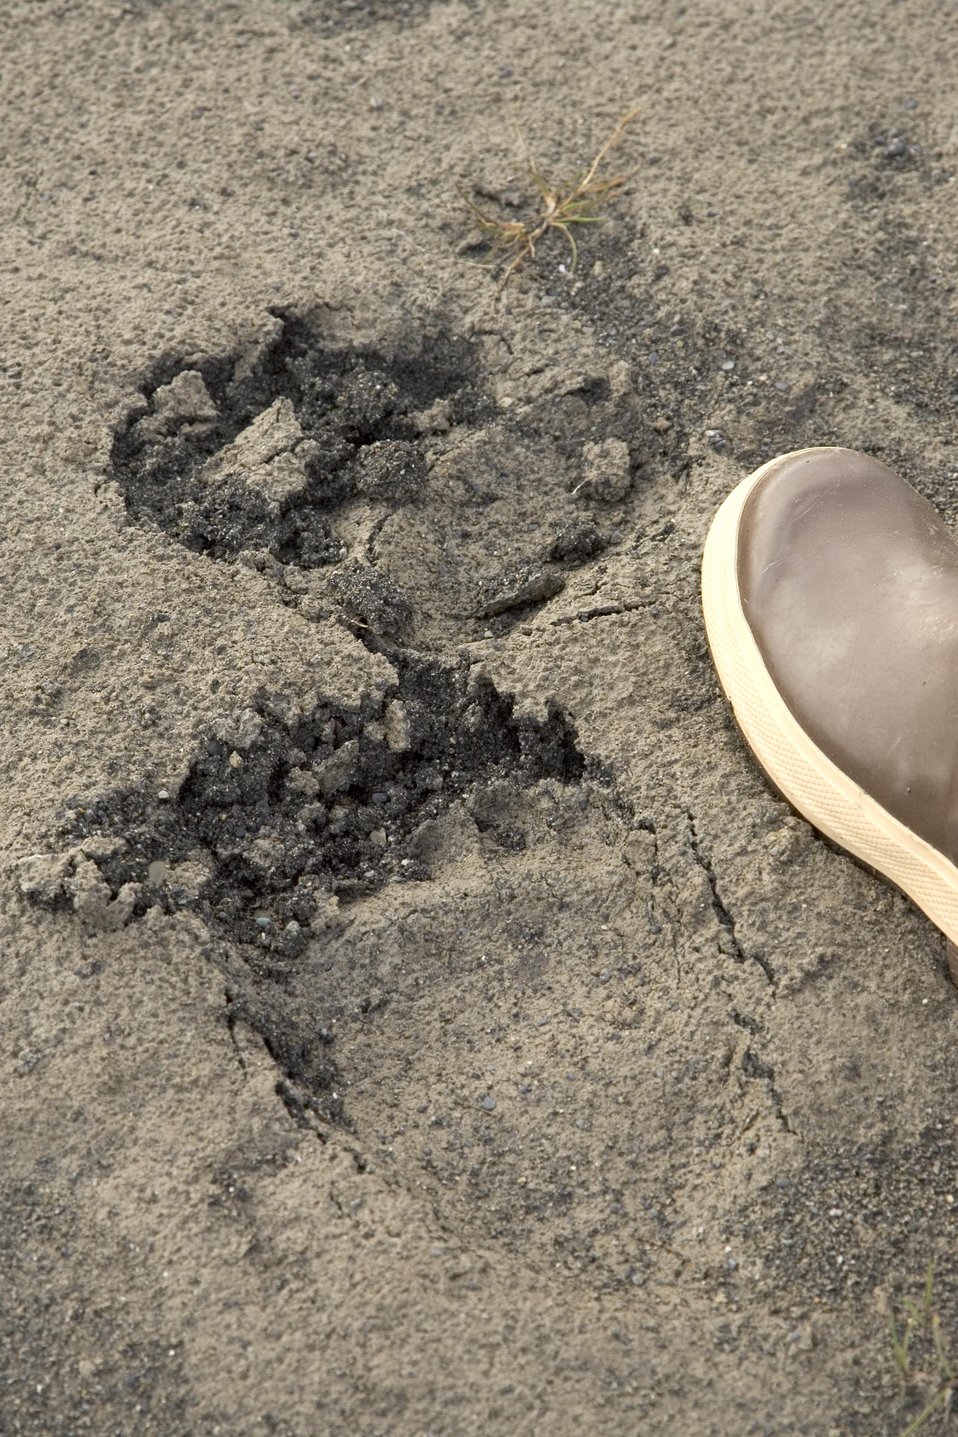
Arctic National Wildlife Refuge